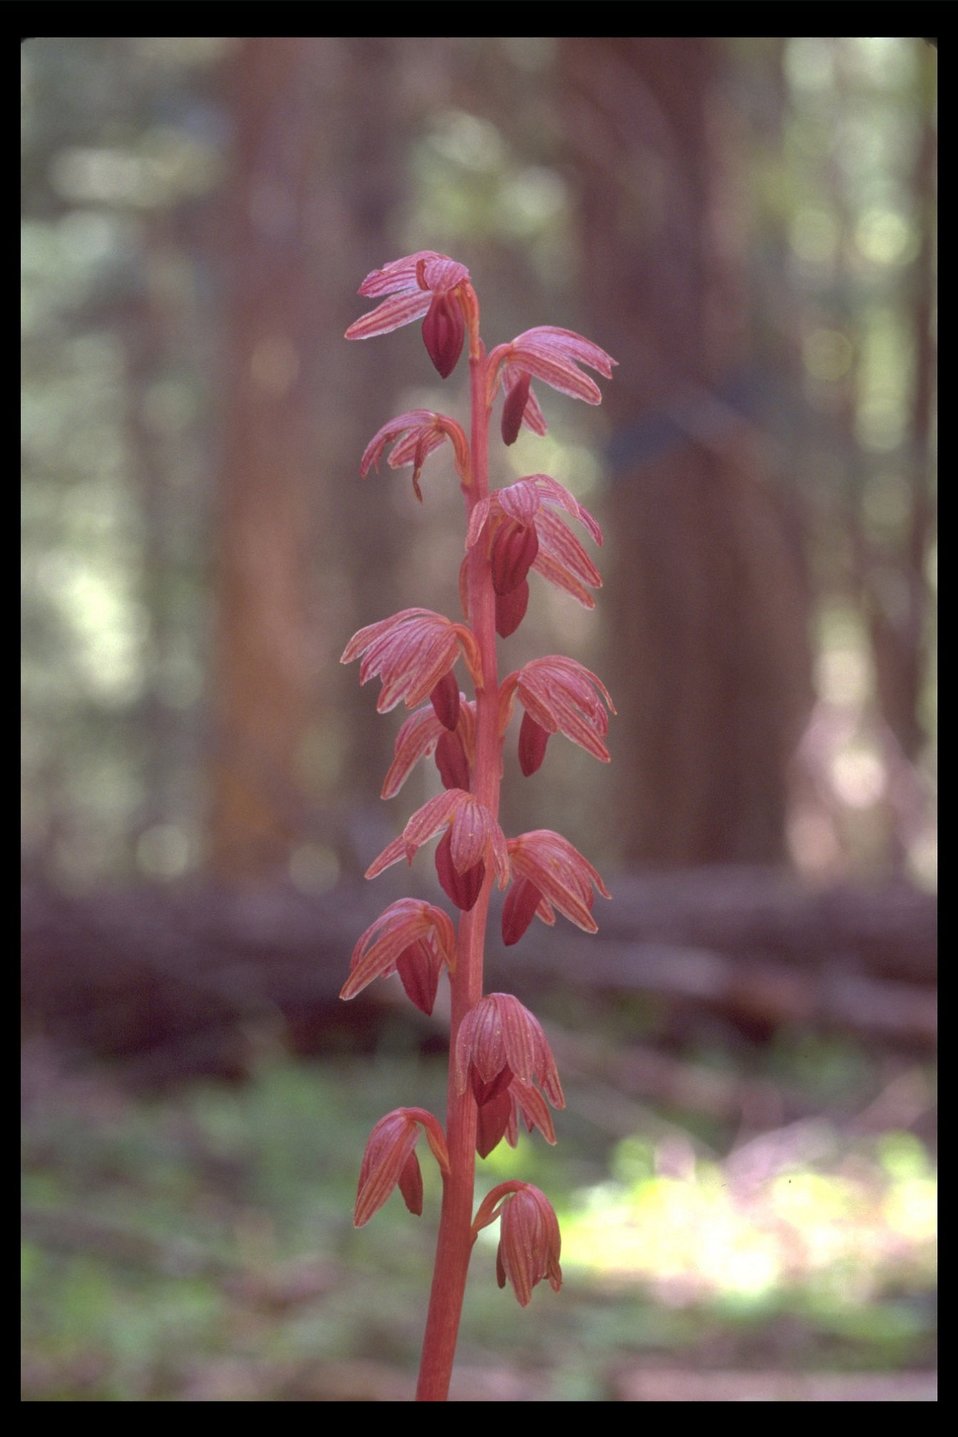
Striped Coralroot (Corallorhiza striata) along Twincheria Creek.